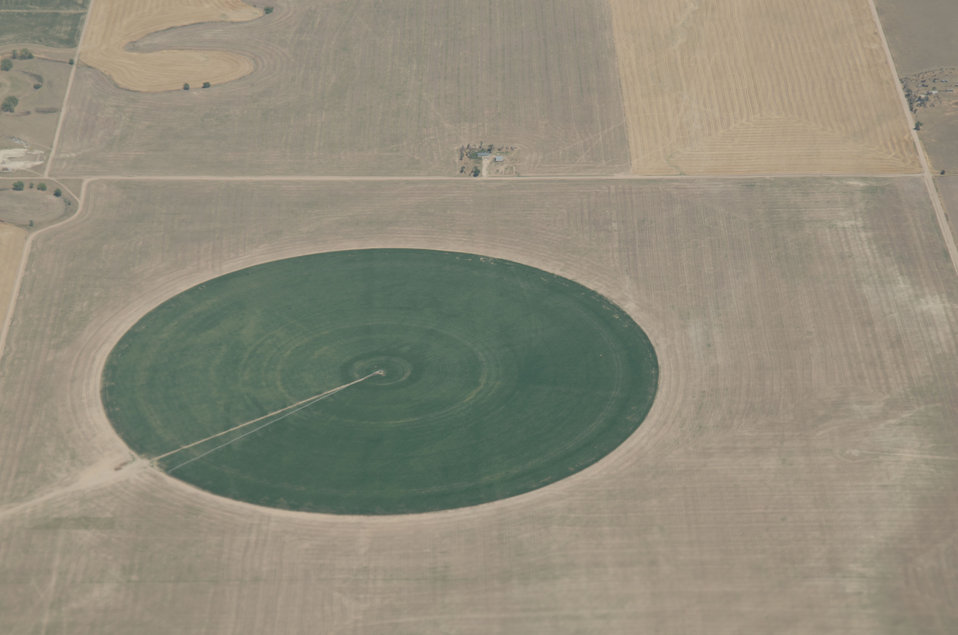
Aerial views of drought affected Colorado dryland crops near Byers, Colorado, on Saturday, July 21, 2012. Green areas are irrigated.